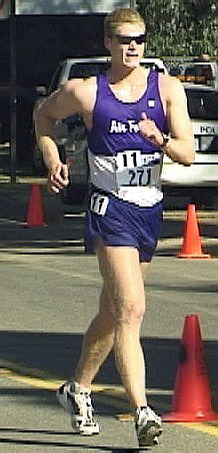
Warren missileer races toward Olympics

F.E. WARREN AIR FORCE BASE, Wyo. -- First Lt. Kevin Eastler racewalks during a recent competition. Eastler is one of 20 Air Force athletes selected for the World Class Athlete Program.